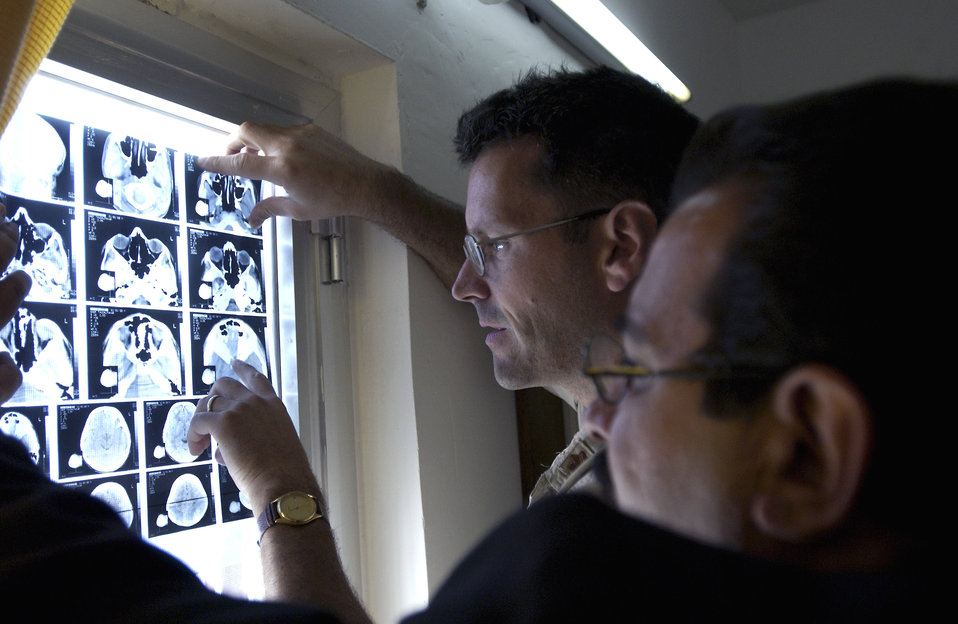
medical visit

FRENCH VILLAGE, Iraq -- Maj. (Dr.) Gene Delaune and an Iraqi doctor look at the CT-scan images of a 12-year-old boy. The doctors were trying to diagnose a vision problem. On the clinic's first day, Oct. 18, it is neither fully staffed nor equipped, and only five patients were treated. Delaune is an individual mobilization augmentee deployed from the 89th Medical Group at Andrews Air Force Base, Md.